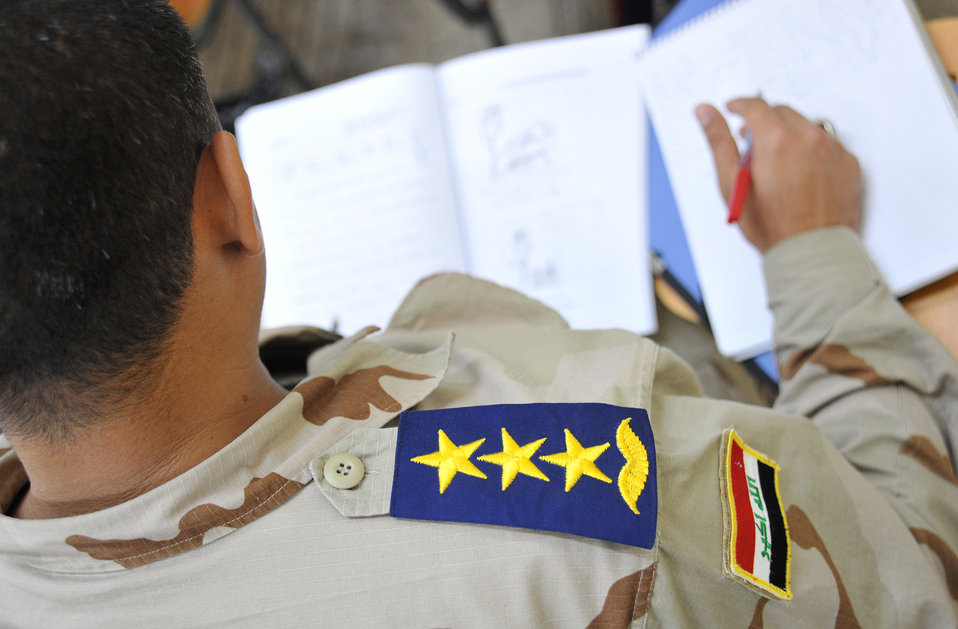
Iraqi Air Force Colre Values

An Iraqi air force captain looks over a test booklet during an English language class at the Iraqi Air Force Training School Dec. 13, 2010, in Taji, Iraq. To date, 28 students have completed the training, which takes up to 12 months to complete.